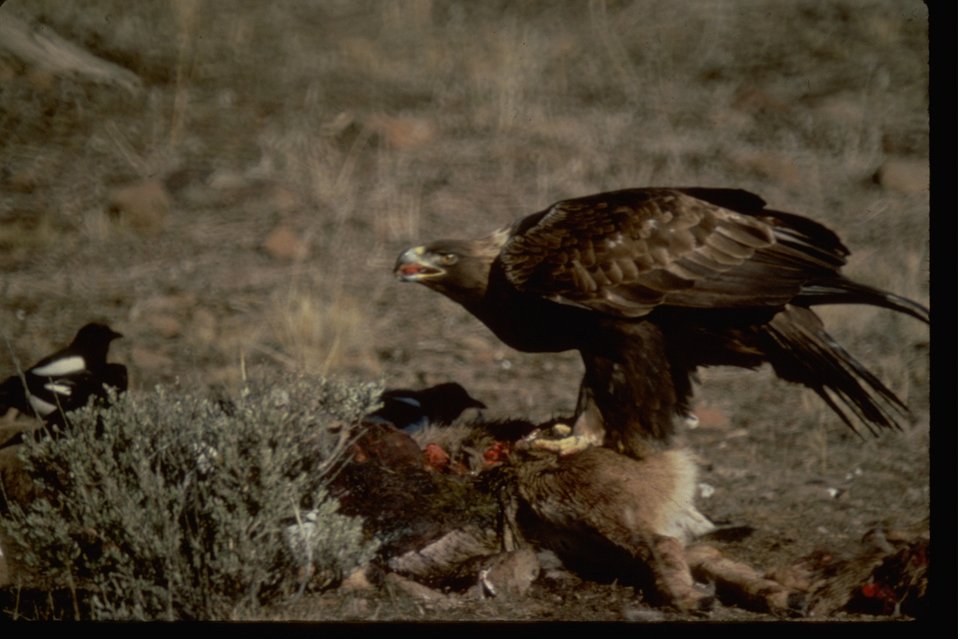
Golden Eagle scavenging on a dead rabbit with other birds waiting until he is finished eating. Scientific name: Aquila chrysaetos. Family: Accipitridae.